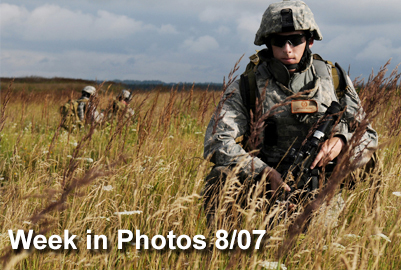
Week in Photos 8/07

Air Force Week in Photos for Aug. 7 highlights photos from around the Air Force. In this photo by Staff Sgt. Jocelyn Rich, a Tactical Air Control Party Airman secures a position for teammates during a multi-national exercise taking place in Grafenwoehr, Germany.